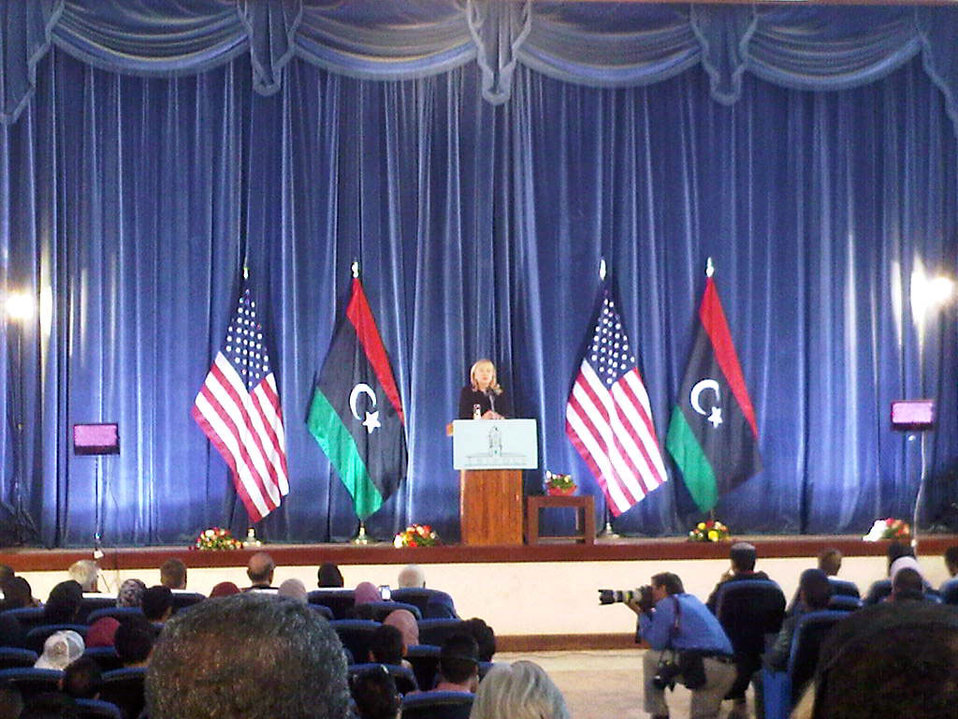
Secretary Clinton Holds a Town Hall at Tripoli University

U.S. Secretary of State Hillary Rodham Clinton holds a town hall at Tripoli University in Libya on October 18, 2011.